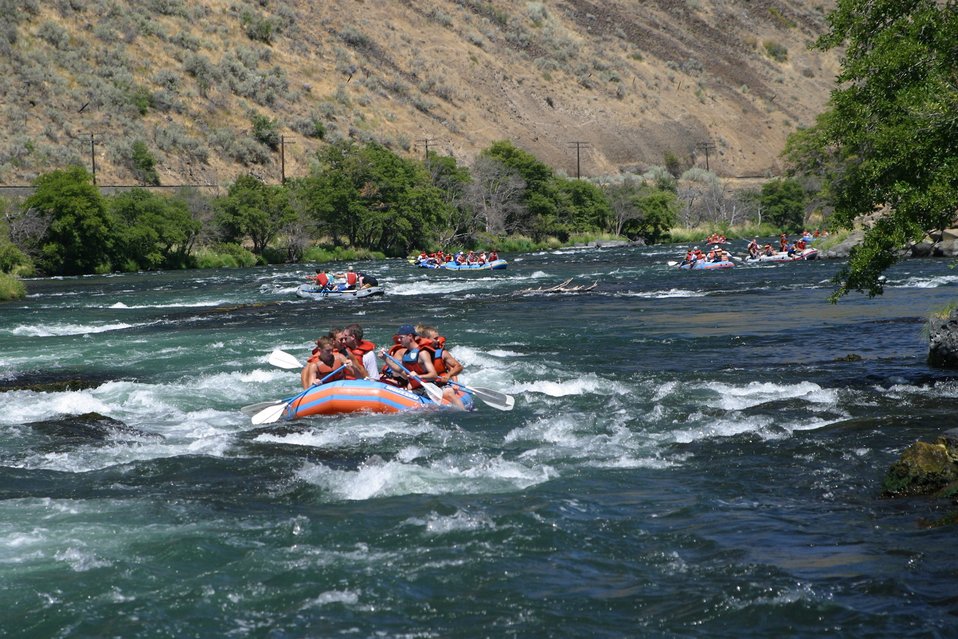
Oak Springs is a Class IV Rapids. The left channel has shallow rocks, large standing waves, turbulent currents and a large hole during high flows. The right channel has a large hole, shallow rocks, and turbulent currents. 7/26/03 Pelton Dam 3600 cfs: Moody Rapids 4300 cfs.